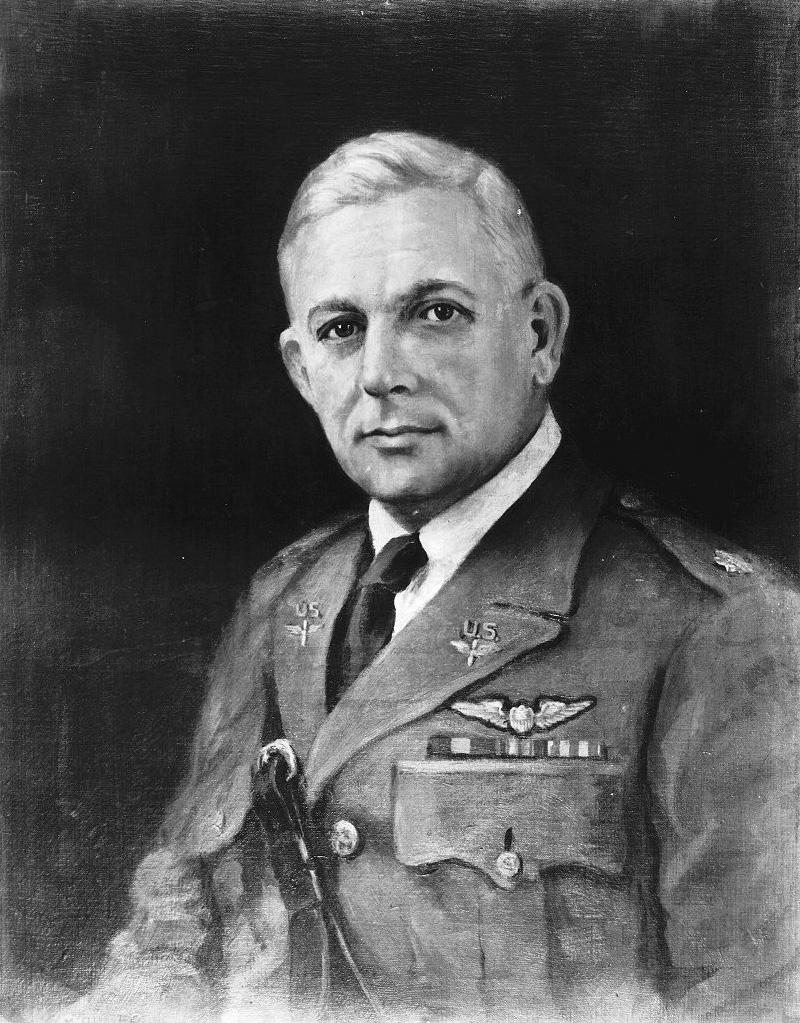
Portrait of Lt. Col. Horace Hickam

This portrait of Lt. Col. Horace Hickam was painted by Mrs. Oda Elgin. Hickam Air Force Base was named for Colonel Hickam May 31, 1935. The colonel was killed in a plane crash Nov. 5, 1934.